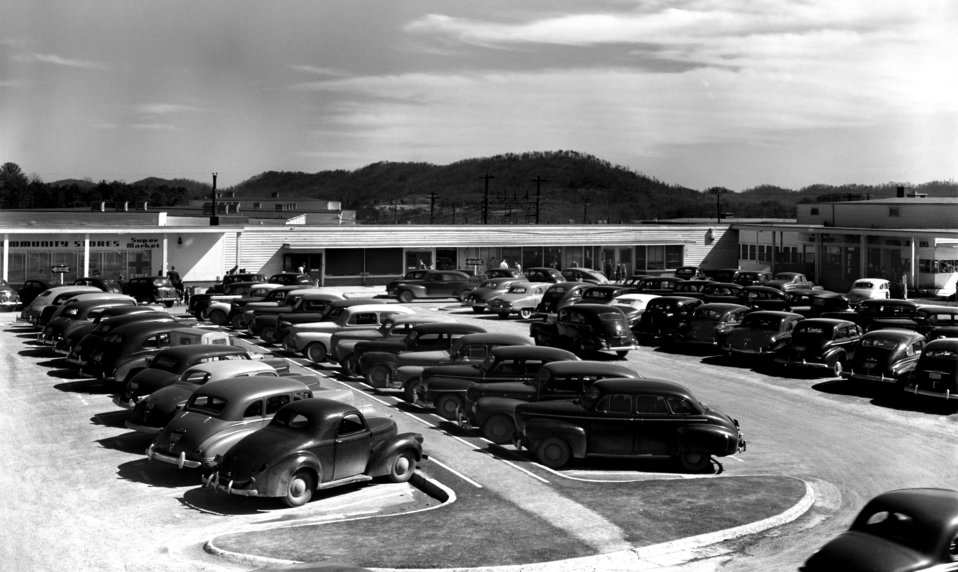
Jackson Square Shopping Center Oak Ridge 1948

4361-5a DOE photo Ed Westcott 3-6-1948 Oak Ridge Tennessee